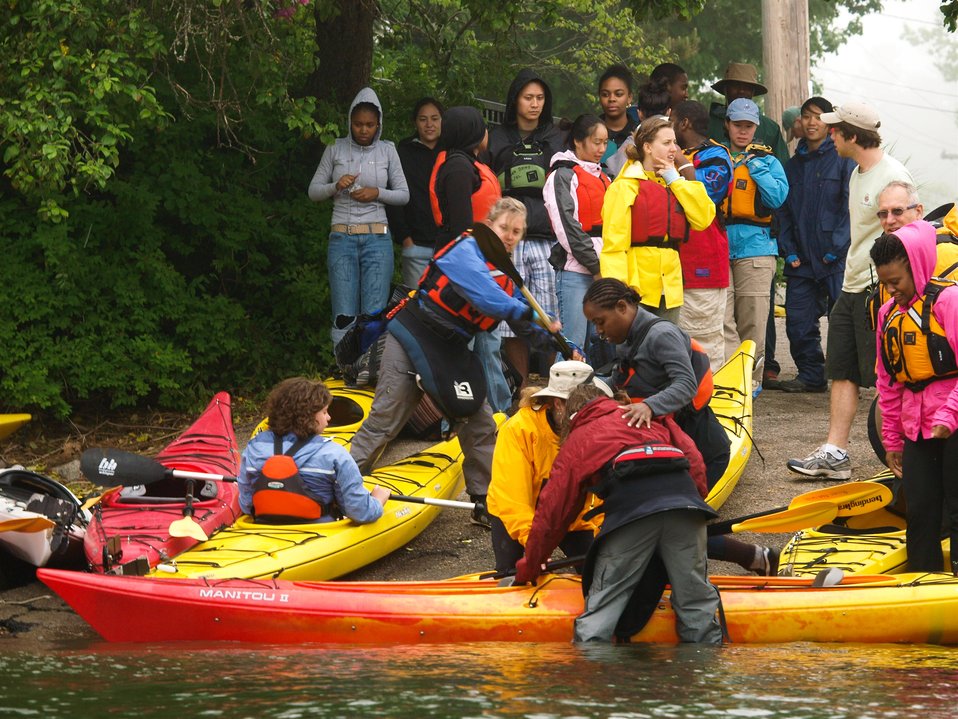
Kayak Trip